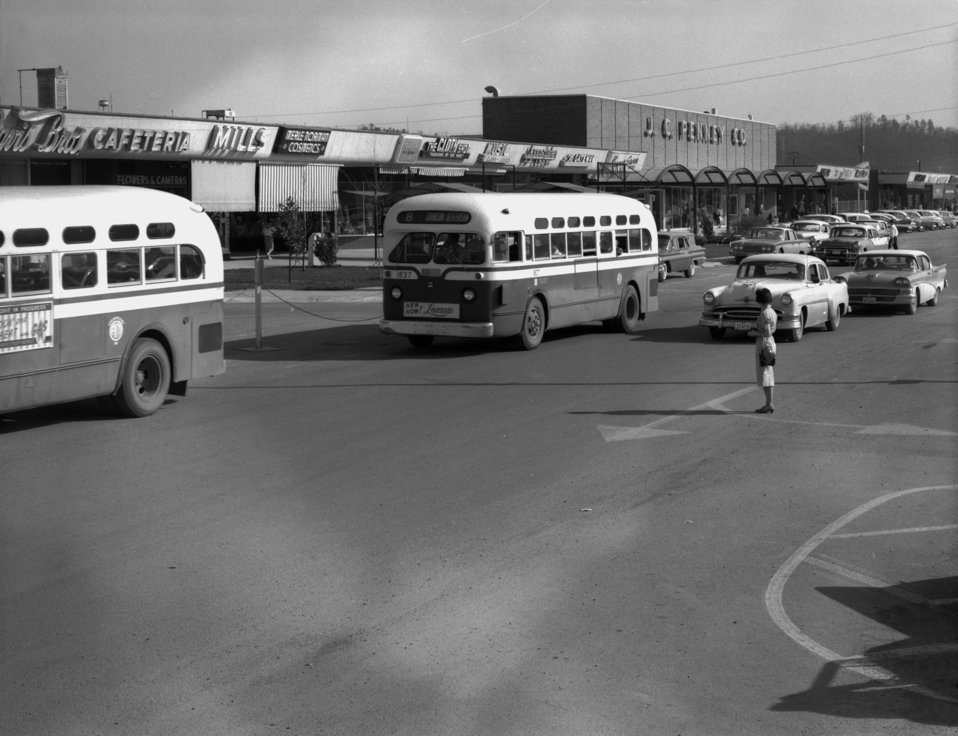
Traffic Downtown Center Oak Ridge

60-537 DOE photo by T. R. Cook

Downtown Center Oak Ridge Tennessee May 1960